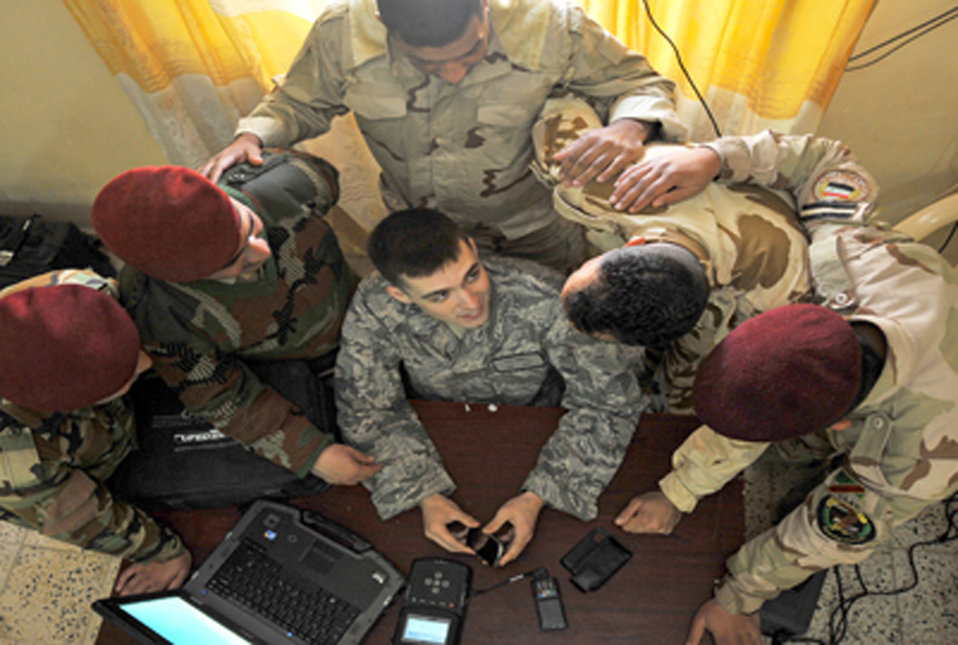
DOMEX

Airman 1st Class Luke Howell shows Iraqi soldiers how to use a CelleBrite machine to gather intelligence from a phone Jan. 5, 2011, on Joint Security Station Constitution, Iraq. Airman Howell is a documentation and media exploitation analyst at Camp Liberty, Iraq. The DOMEX mission is to gather actionable intelligence from documents, electronic devices and other materials collected on the battlefield.